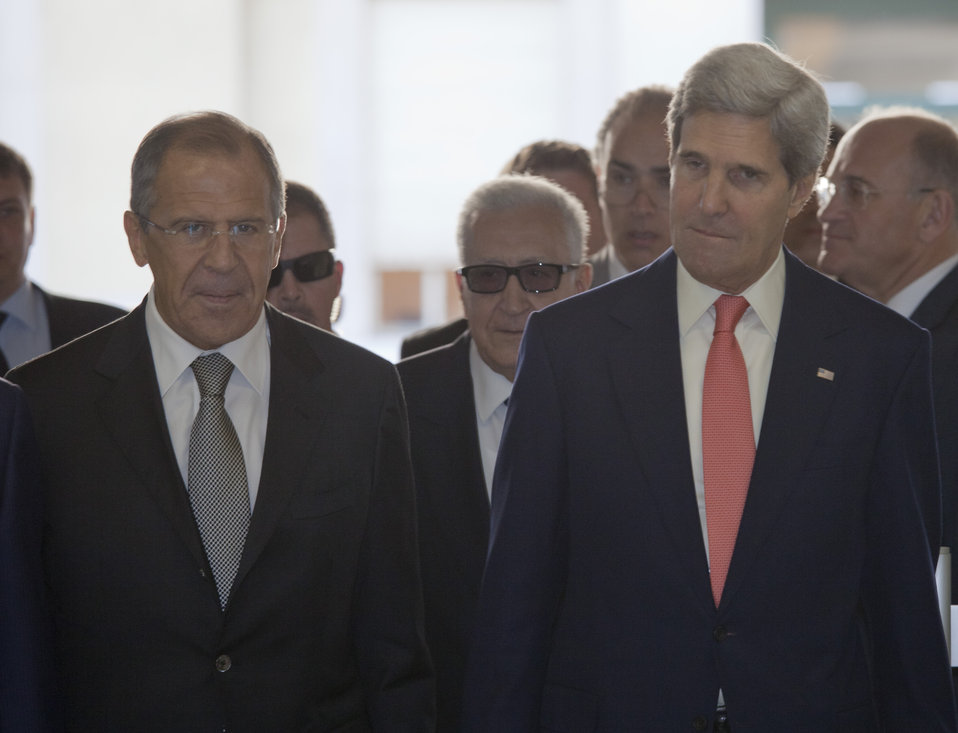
Secretary Kerry and Russian Foreign Minister Lavrov Enter UN Headquarters in Geneva

U.S. Secretary of State John Kerry and Russian Foreign Minister Sergey Lavrov enter the United Nations headquarters for a discussion focused on a political solution to Syria's civil war in Geneva, Switzerland, on September 13, 2013.